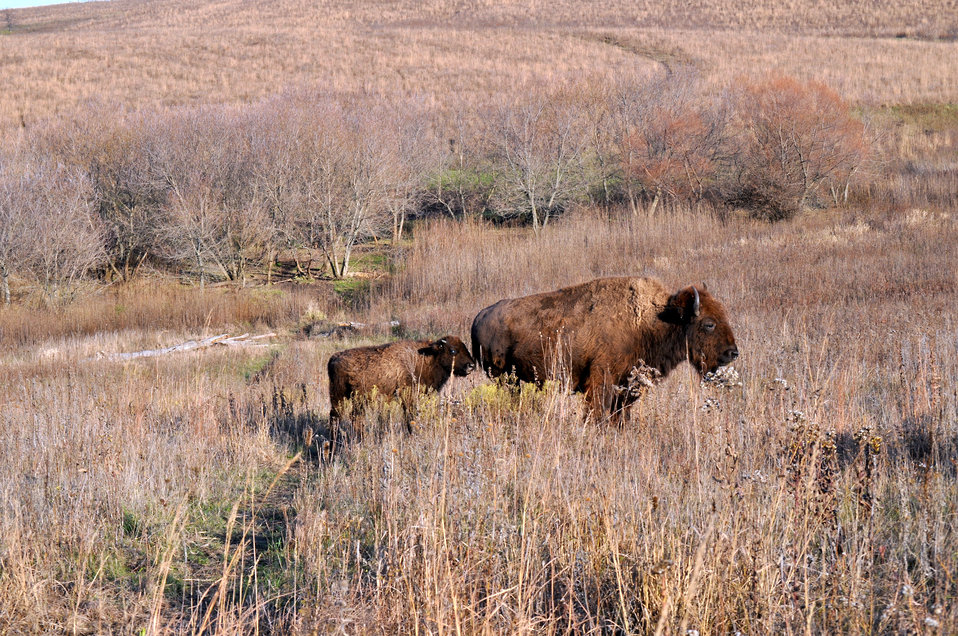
Bison at Dunn Ranch, an a prairie restored by The Nature Conservancy in northwest Missouri.